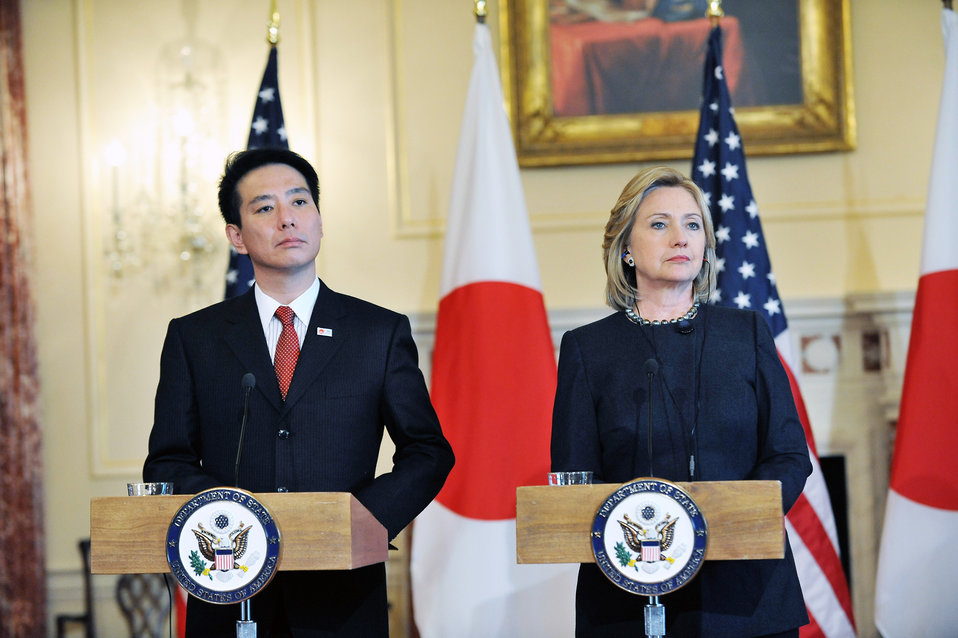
Secretary Clinton and Japanese Foreign Minister Fseiji Maehara Host a Joint Press Availability

U.S. Secretary of State Hillary Rodham Clinton and Japanese Foreign Seiji Maehara hold a joint press availability in the Benjamin Franklin Room at the U.S. Department of State in Washington, D.C., on January 6, 2010.